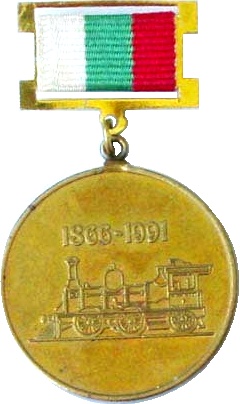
Bulgarian Medal For The 125th Anniversary Of Bulgarian State Railways.